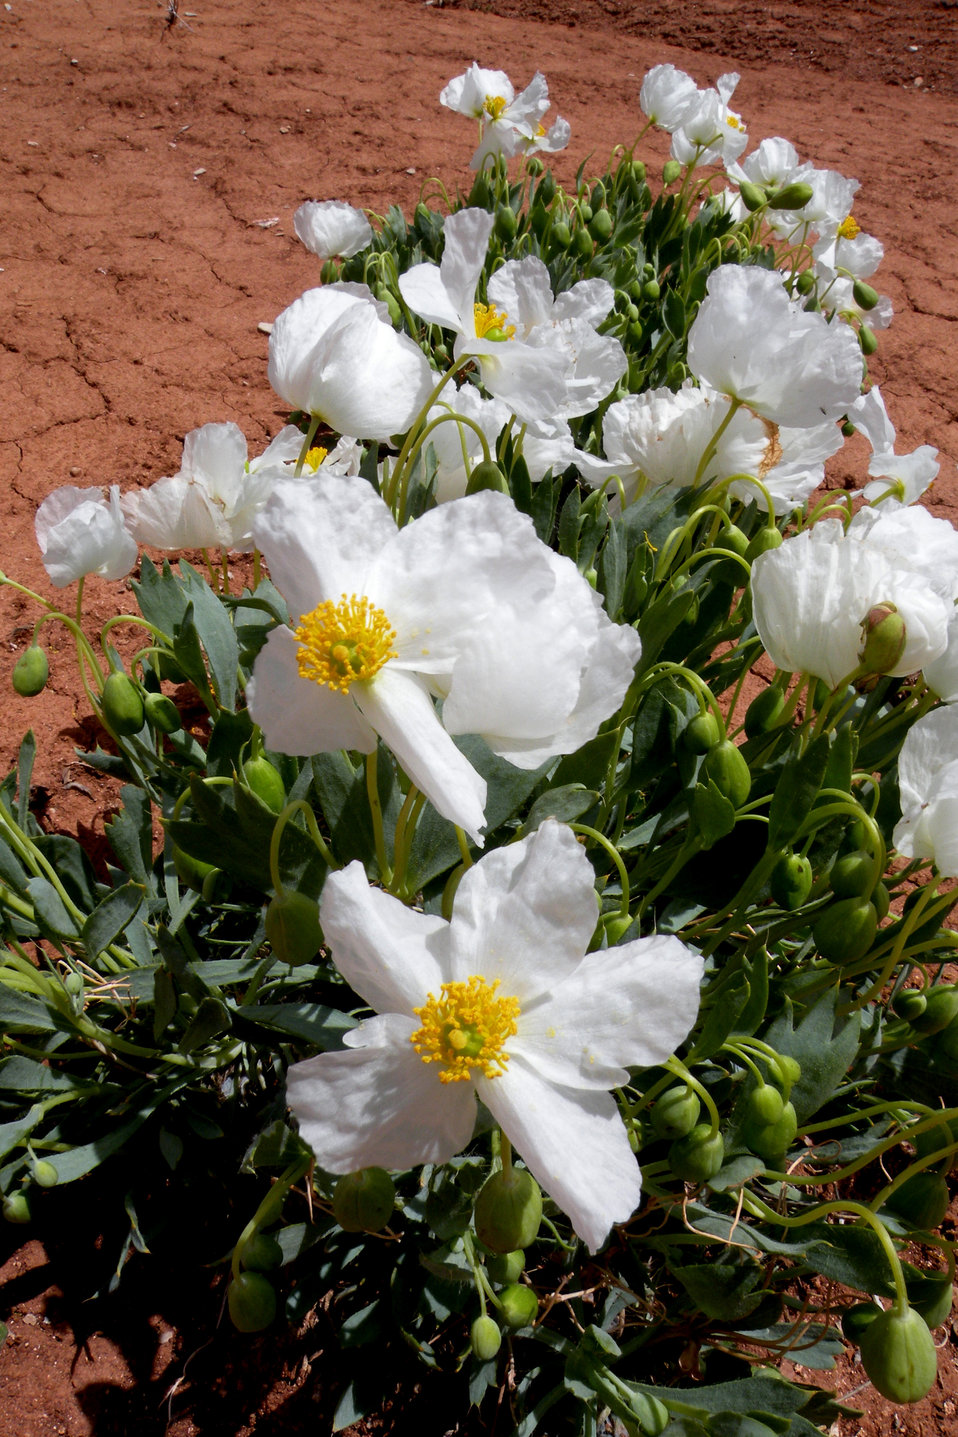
Dwarf bearclaw poppy (Arctomecon humilis)

The dwarf bearclaw poppy is endemic to Washington County, UT. The species occurs on rolling hills and bluffs in sparsely-vegetated desert shrub communities between 2,700 ft. and 3,330 ft. in elevation. It is listed endangered